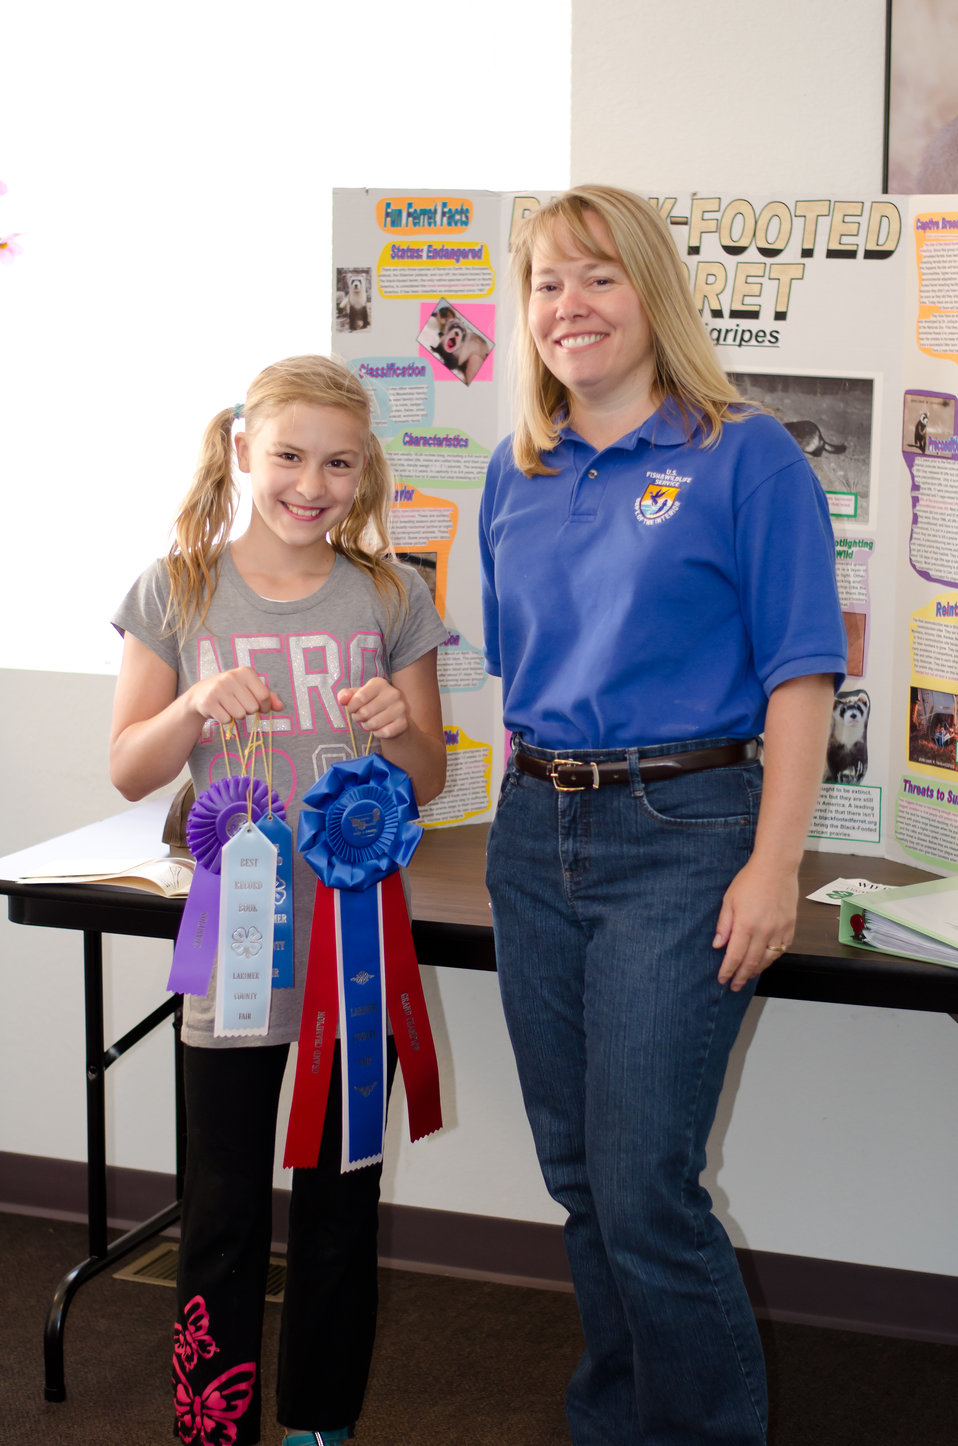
Hannah Cherkauer & Noreen Walsh with Winning Project

Hannah Cherkauer, a fourth grader who won the Larimer County Fair’s 2011 Grand Champion Award and placed fourth at the 2011 Colorado State Fair for her 4-H Black-footed Ferret project, sports her ribbons with Mountain-Prairie Deputy Regional Director Noreen Walsh during a visit to the National Black-footed Ferret Conservation Center. At the meeting, Noreen encouraged Hannah to consider a career in conservation.